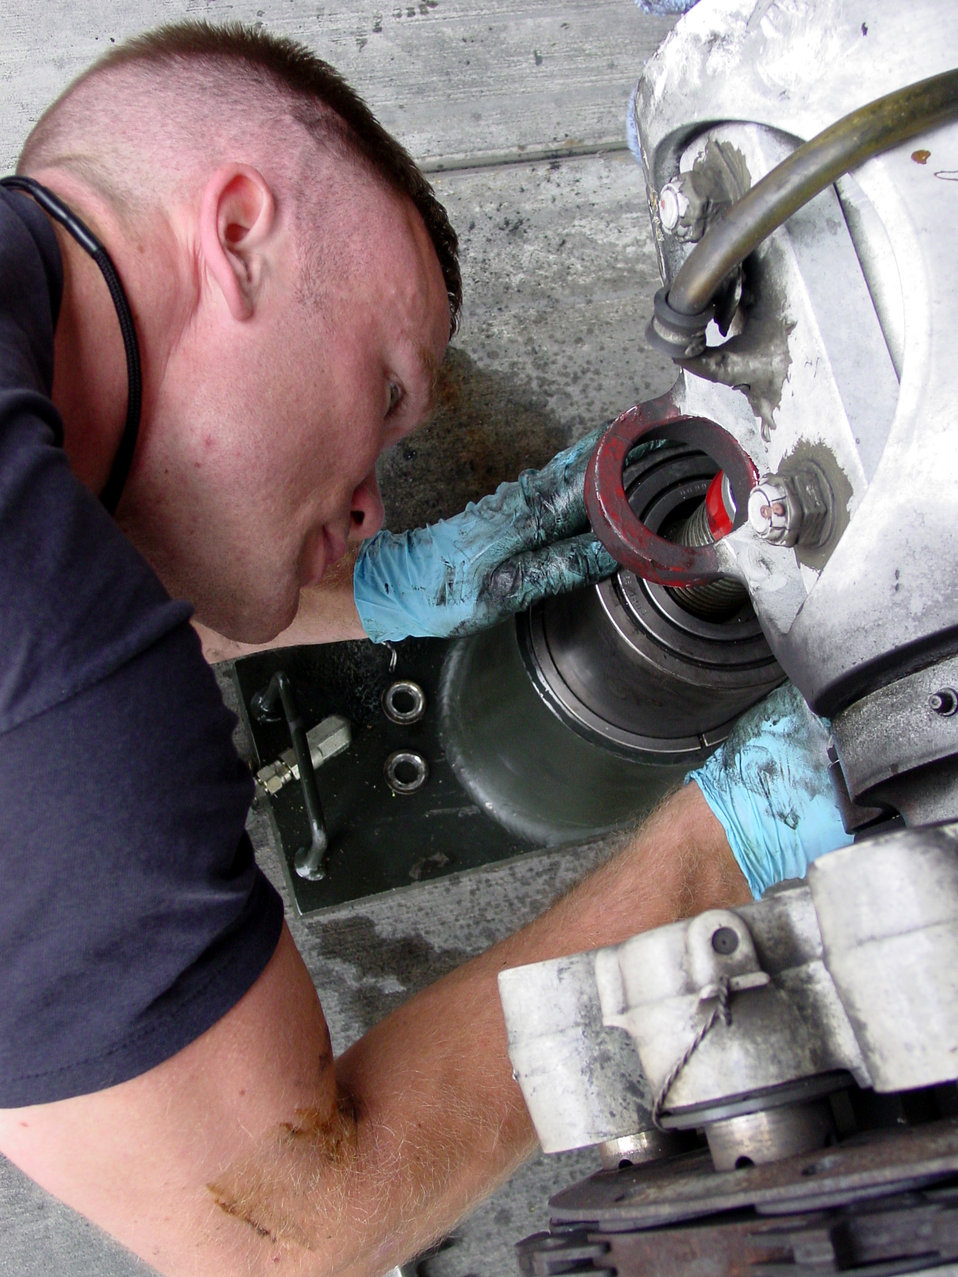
Give 'em a 'brake'

PORTLAND INTERNATIONAL AIRPORT, Ore. -- Staff Sgt. Matt Stark gets down and dirty during a brake change on a KC-135 Stratotanker here. The aircraft's primary mission is air refueling. Sergeant Stark is assigned to the 939th Aircraft Maintenance Squadron.